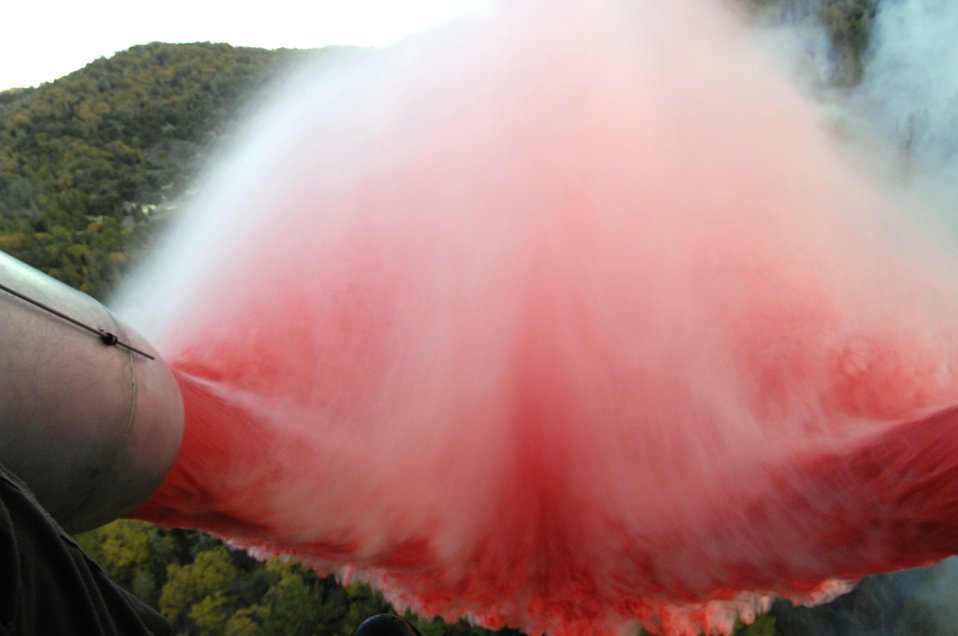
C-130s fight California wildfires

Approximately 3,000 gallons of fire retardant is deployed Oct. 24 over the Poomacha Fire in North San Diego County, Calif. The C-130 Hercules and crew are assigned to the 302nd Airlift Wing from Peterson Air Force Base, Colo. The aircraft launched from Channel Islands Air National Guard Station, Calif. Air Force Reserve Command officials sent two of its designated firefighting C-130H3 aircraft to help battle the raging wildfires in Southern California.